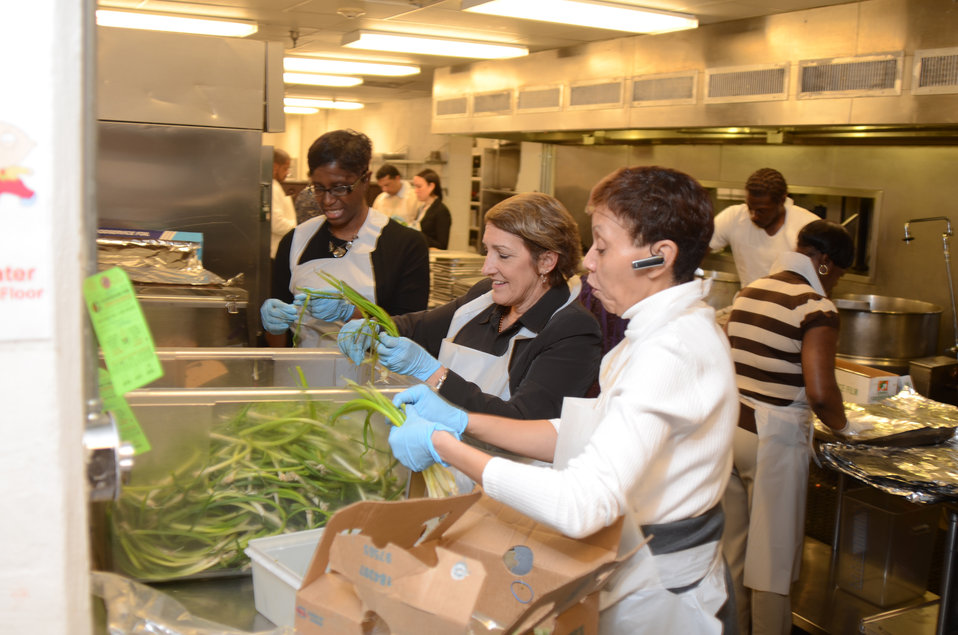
From right: Lennetta Elias, Office of the Chief Financial Officer, Louise Fox, Departmental Management, and Kim Chapman, Office of the Chief Financial Officer help prepare the evening meal at the D.C. Central Kitchen during USDA’s National Service Day on January 12, 2012. NSD honors Dr. Martin Luther Kings’s contributions to the Civil Rights Movement. The D.C. Central Kitchen turns leftover food into millions of meals for thousands of at-risk individuals while offering nationally recognized culinary job training to once homeless and hungry adults.